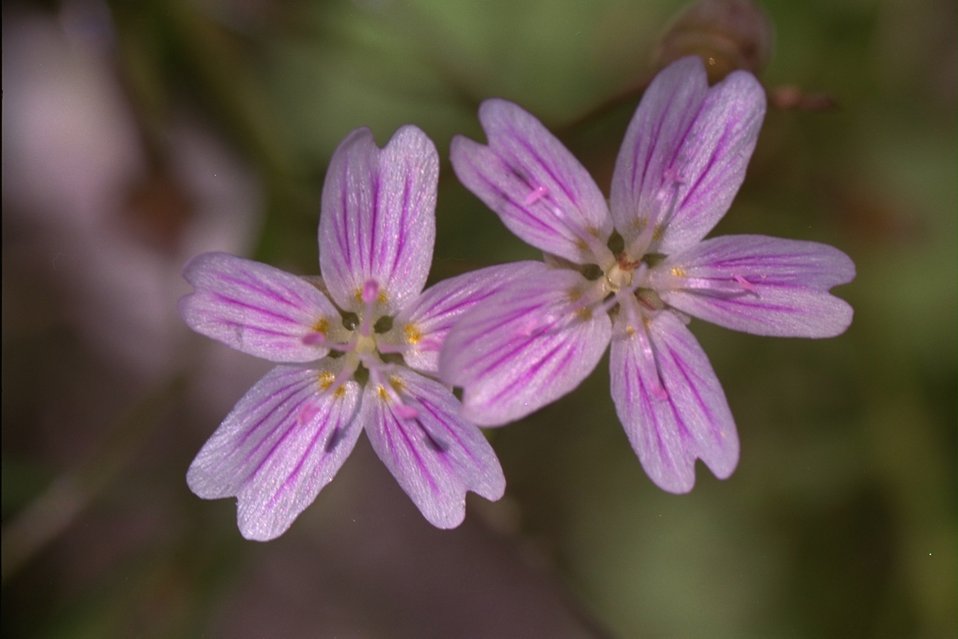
Spring Beauty, also called the Western Spring Beauty, (Claytonia lancelota) near Goolaway Gap.